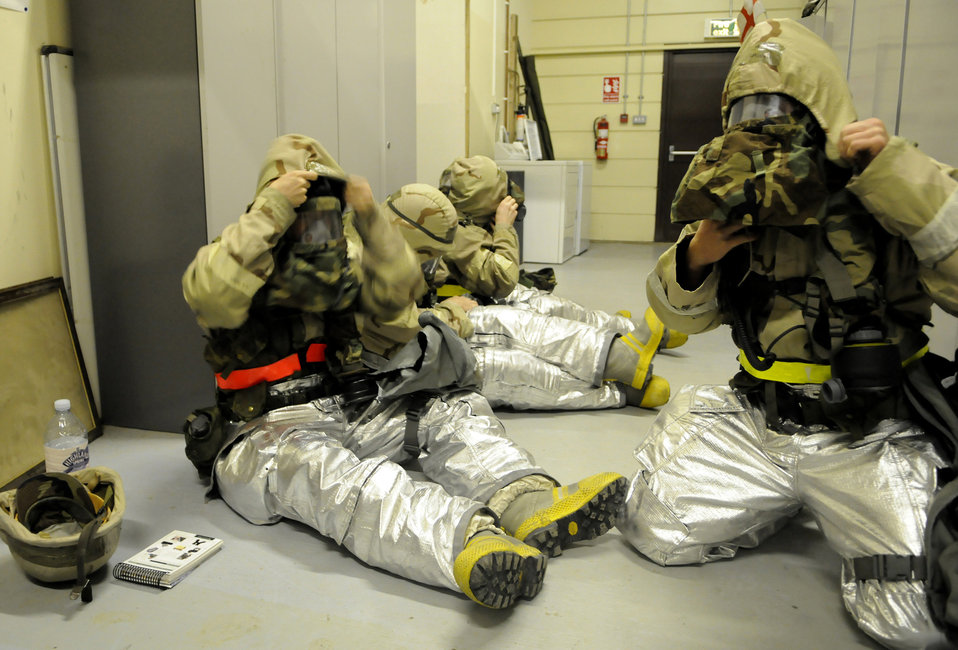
Working the night shift

Firefighters from the 100th Civil Engineer Squadron don specialized chemical suits and masks during a simulated attack July 22 Royal Air Force Mildenhall, England. The attack was one of several that occurred during a phase-two exercise, designed to practice warfighting procedures.